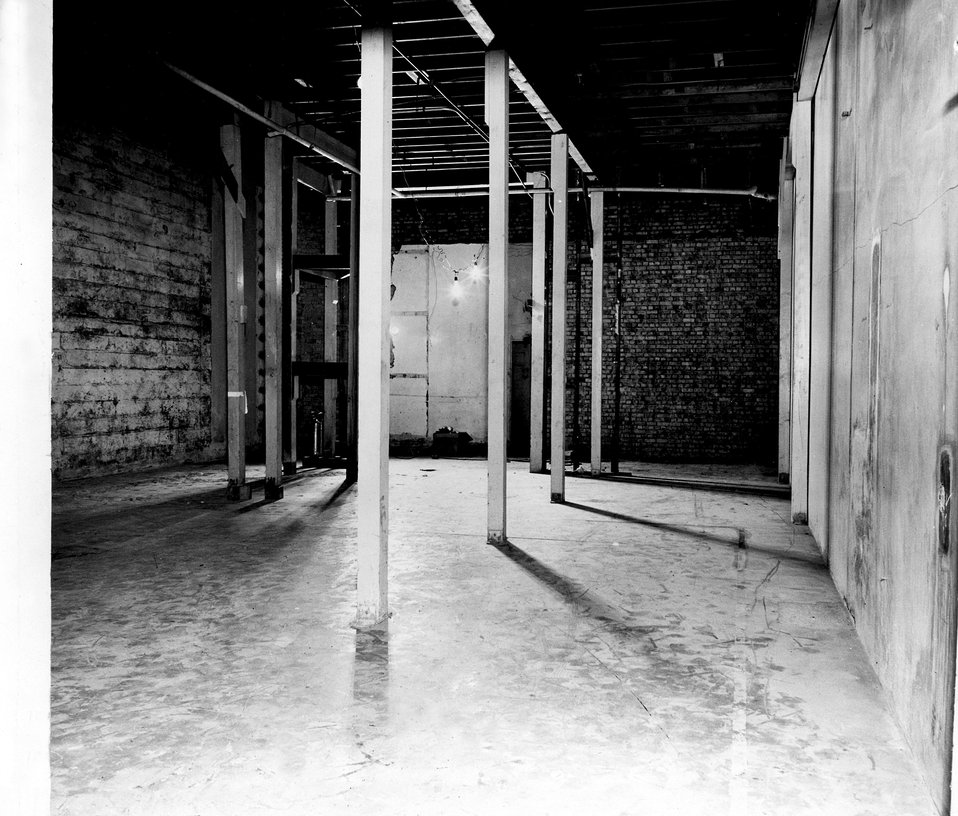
Birthplace of the Atomic Age, the Squash Court under the West Stands of Stagg Field, University of Chicago.